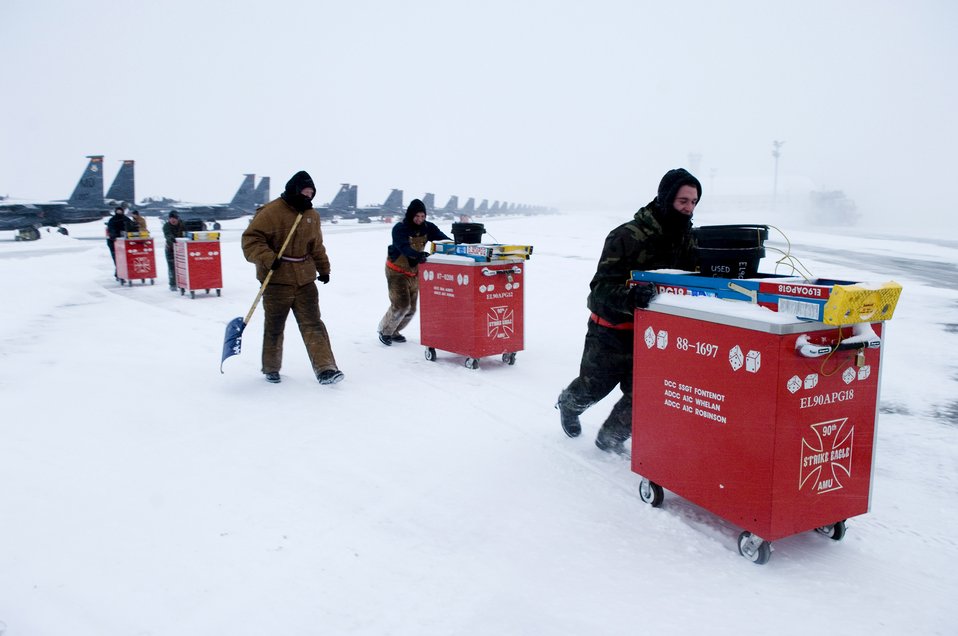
Out of the snow

Members of 90th Air Munitions Unit push their tool chests out of the snow on Elmendorf Air Force Base, Alaska Dec. 18.